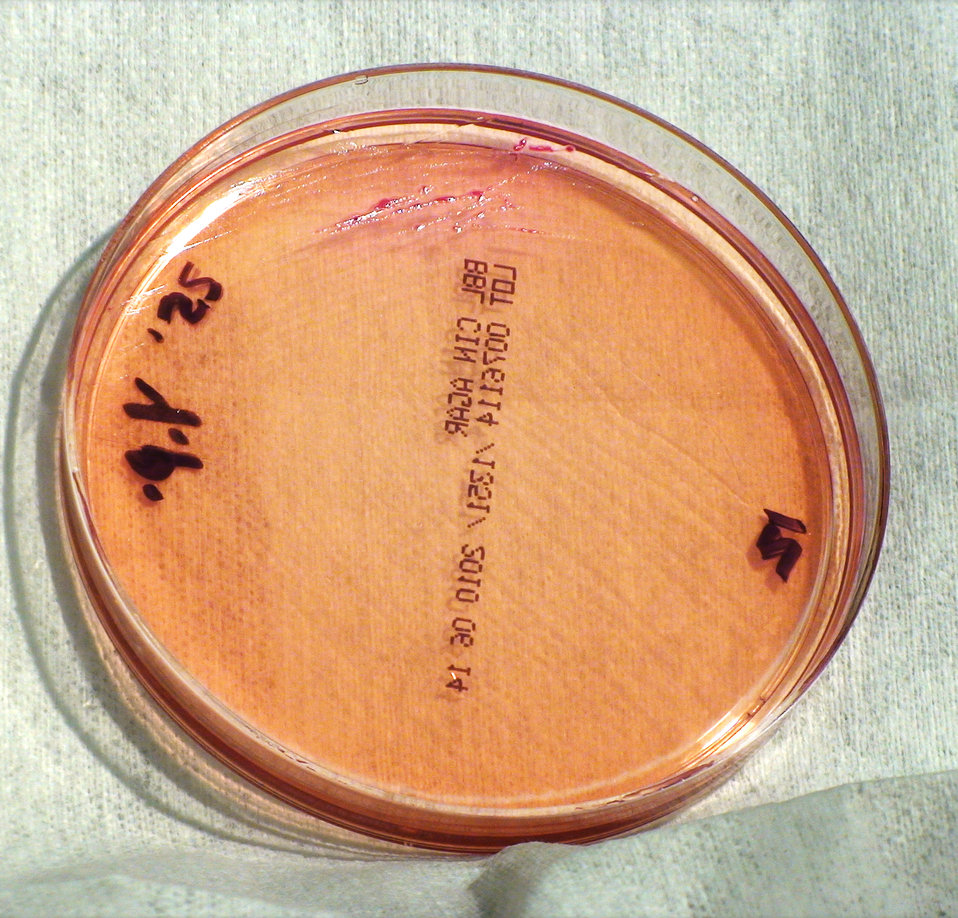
This photograph depicts the colonial morphology displayed by Gram-negative Yersinia pestis bacteria, which was grown on a medium of Cefsulodin Irgasan Novobiocin (CIN) agar, for a 24 hour time period, at a temperature of 25�C. See PHIL 12466, for a closer view of these bacterial colonies. This organism is pathogenic towards humans, and is responsible for causing the disease known as plague.